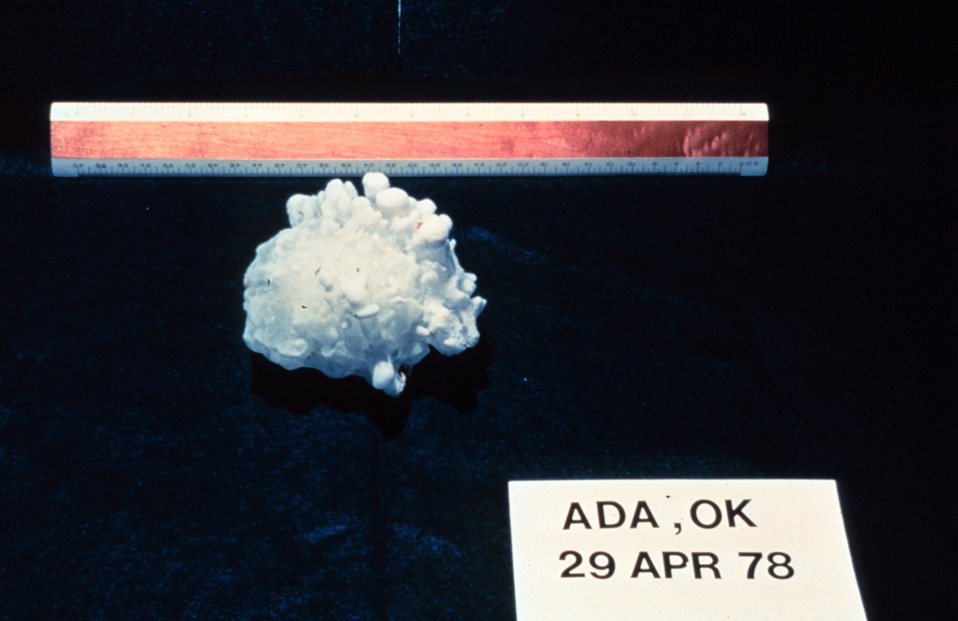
Large hailstone with diameter of approximately 4' (softball size). Smaller stones are collected together to form this large stone.